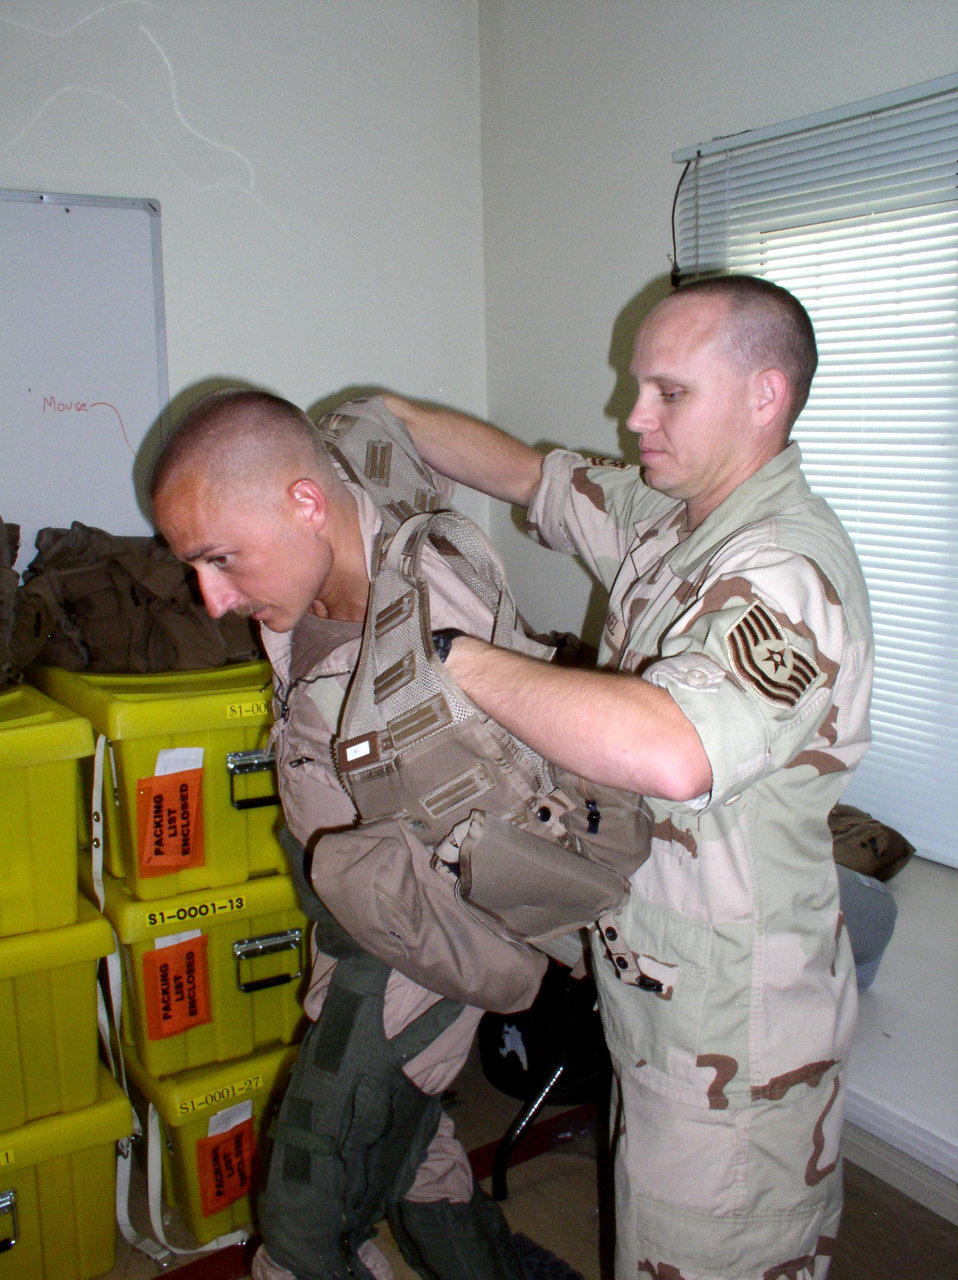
Aircrew support

Life support specialist Tech. Sgt. Theodore Angel assists Capt. Michael Shields, a weapons systems officer, with his survival vest in preparation for a combat mission on Saturday, July 1. Captain Shields and Sergeant Angel are deployed to the 335th Expeditionary Fighter Squadron in Southwest Asia from Seymour Johnson Air Force Base, N.C.